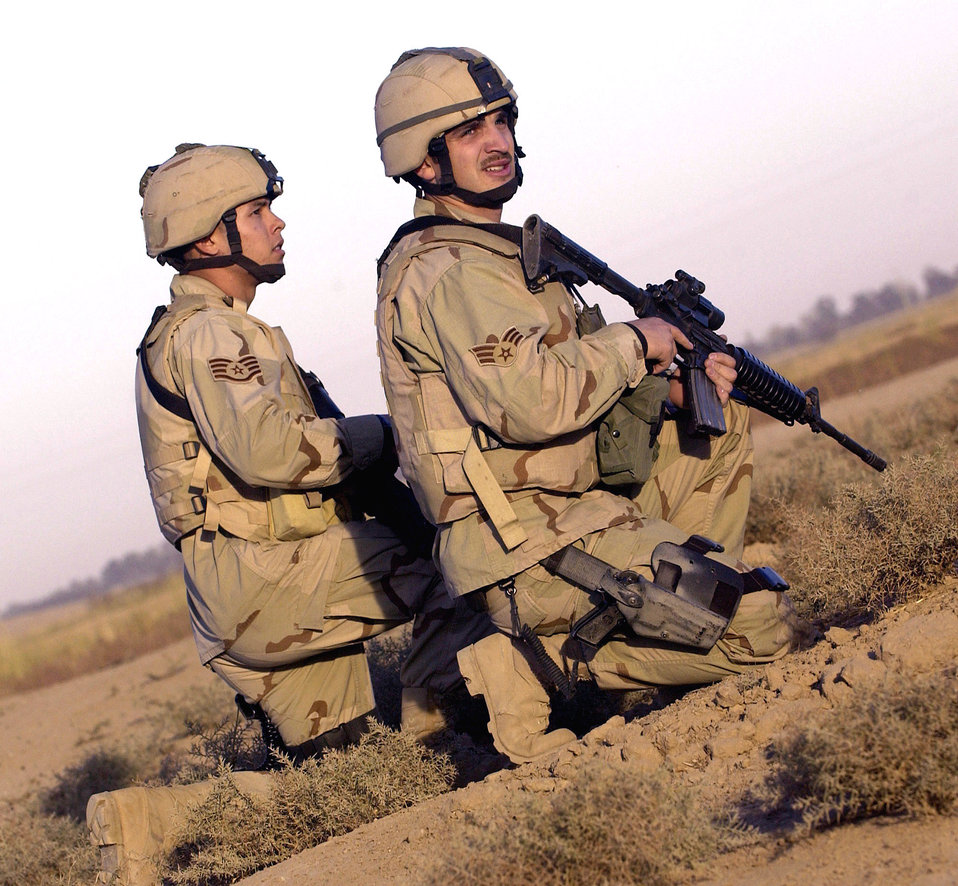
Finding 'Cyclone' targets

AL HAWIJAH, Iraq -- Staff Sgt. Mitchell Yang and Senior Airman Josh Gianni search for a strategic target here Nov. 18 hours before it was leveled by an air strike during Operation Ivy Cyclone. The operation is designed to root out and crush insurgents in Iraq. The airmen are tactical air controllers from U.S. European Command's 4th Air Support Operations Group.